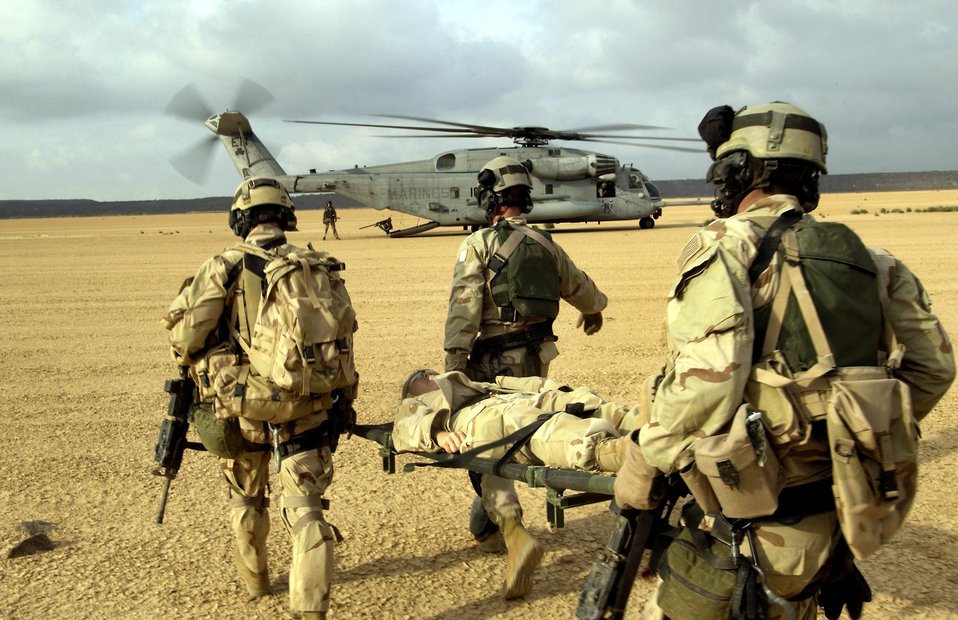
Combat search and rescue realigns

A simulated injured Airman is carried by Air Force pararescuemen toward a Marine CH-53 Super Stallion helicopter during a search and rescue exercise Wednesday, Feb. 8, 2006, at Camp Lemonier, Djibouti, Africa. Administrative control for select active-duty Air Force combat search and rescue assets is transferring from Air Force Special Operations Command to Air Combat Command, the Air Force announced Feb. 27.